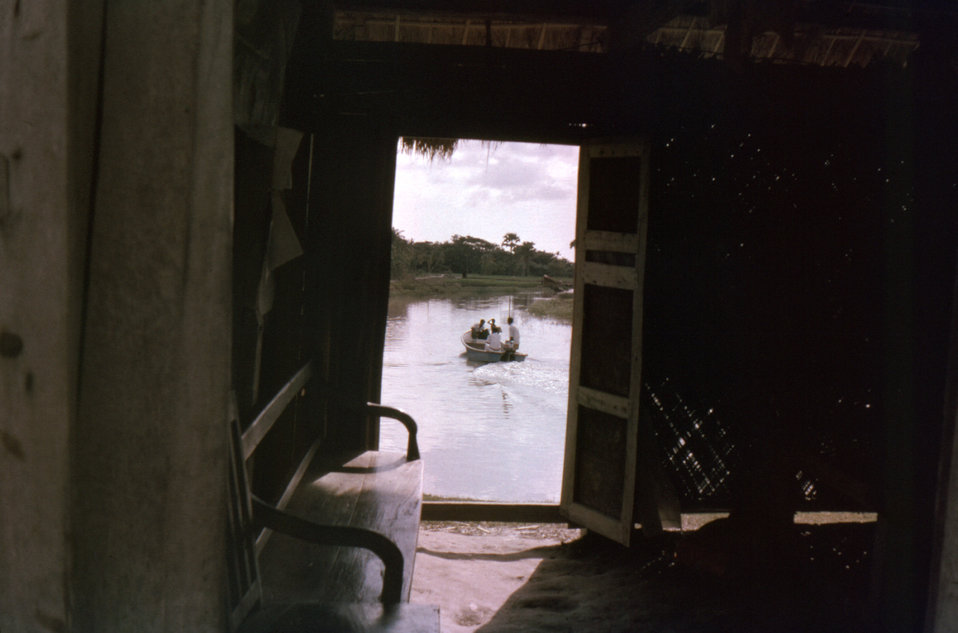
After paying a visit to the Bhola Island, Bangladesh, Lord Hardinge Bazaar, the 'Smallpox Eradication Program Area Coordinator', Dr. Jason Weisfeld (U.S.A.), was shown here as he was being transported back to the port Barisal City. The 'Lord Harding Bazaar' was the location of a 1975 smallpox outbreak.